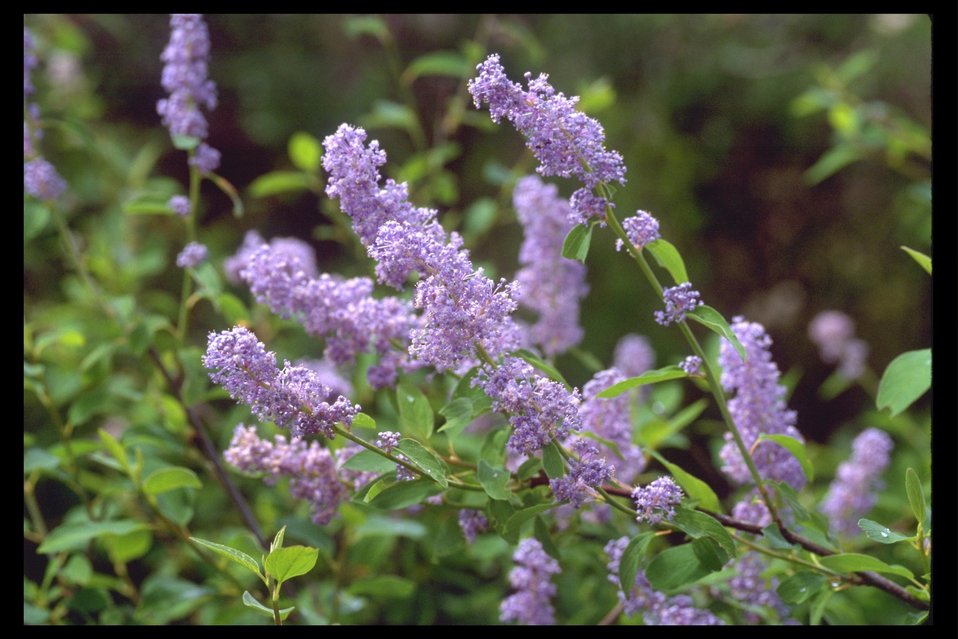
Close up of the blossom on the Deerbrush (Ceanothus integerrimus) at Upper Trail Creek.